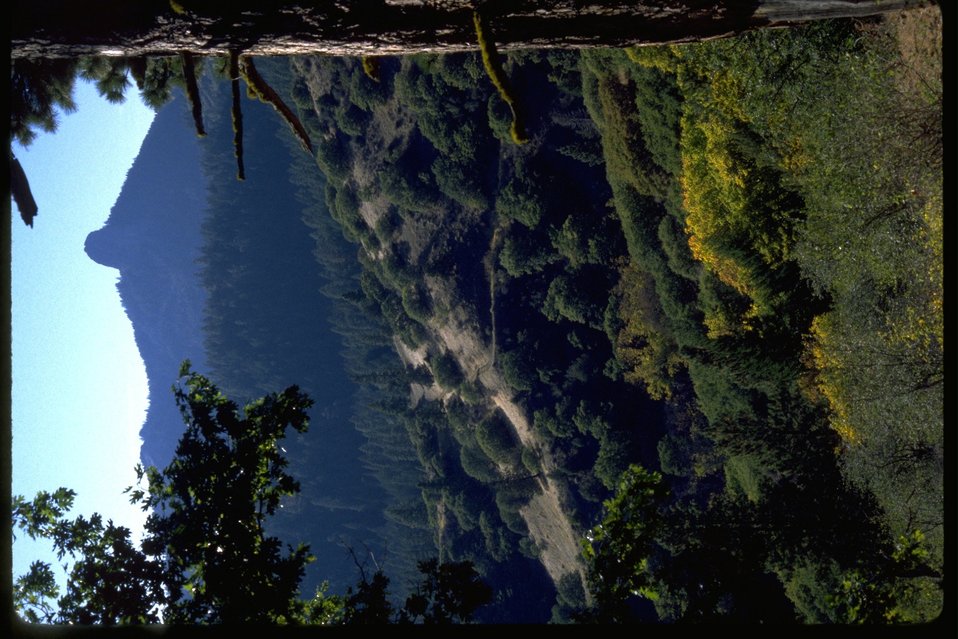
Schoheim Road and Pilot Rock along the east fork of Slide Creek.